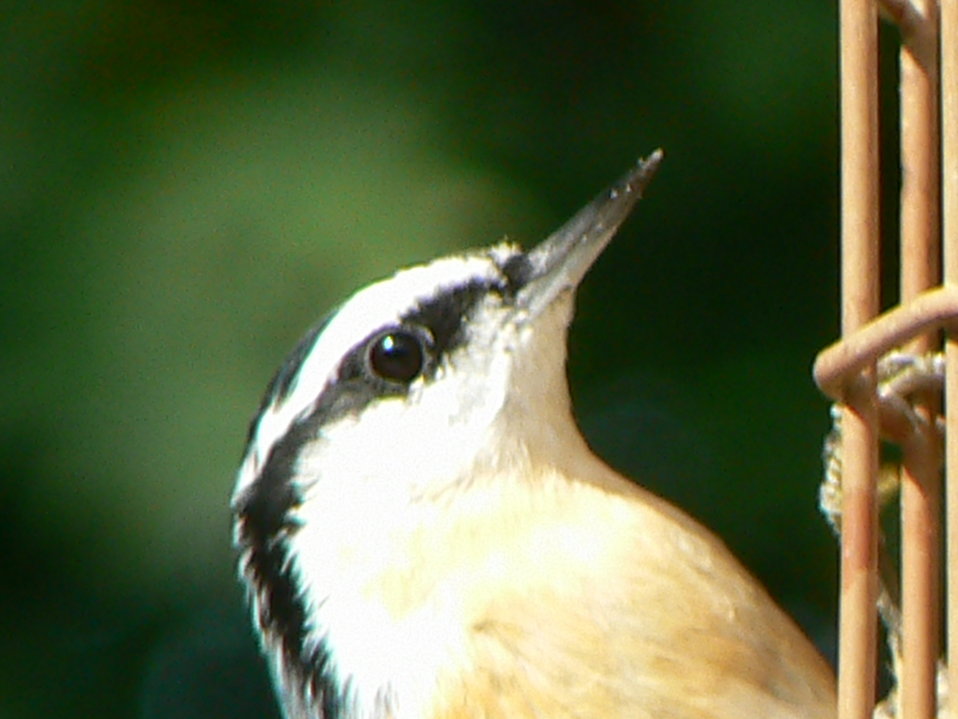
Red-Breasted Nuthatch at Cape May National Wildlife Refuge.